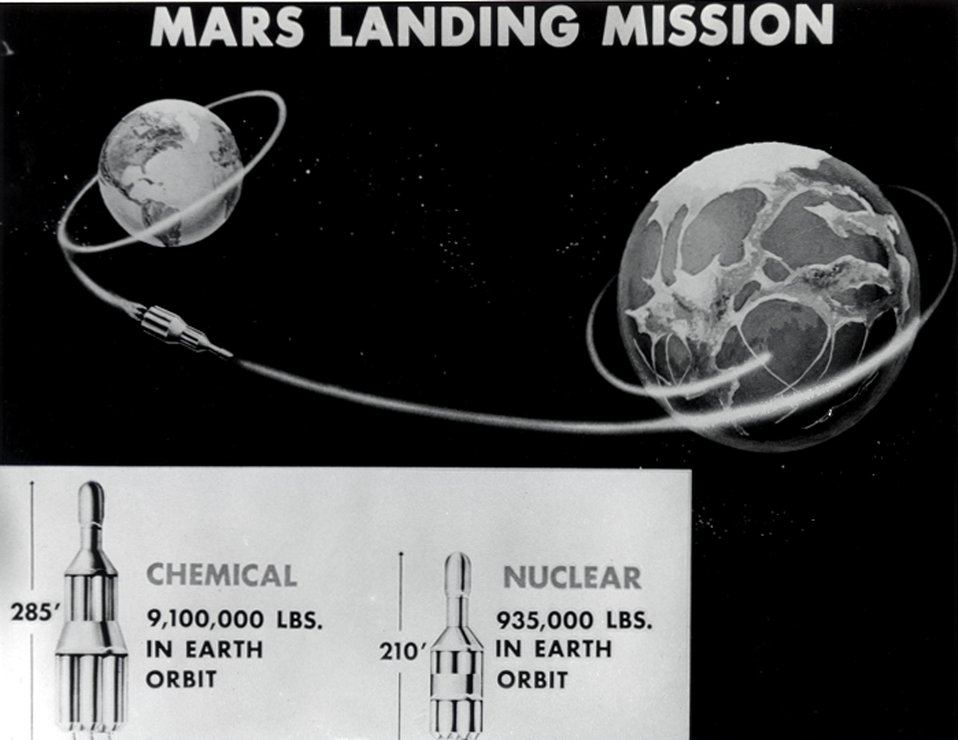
Mars landing mission